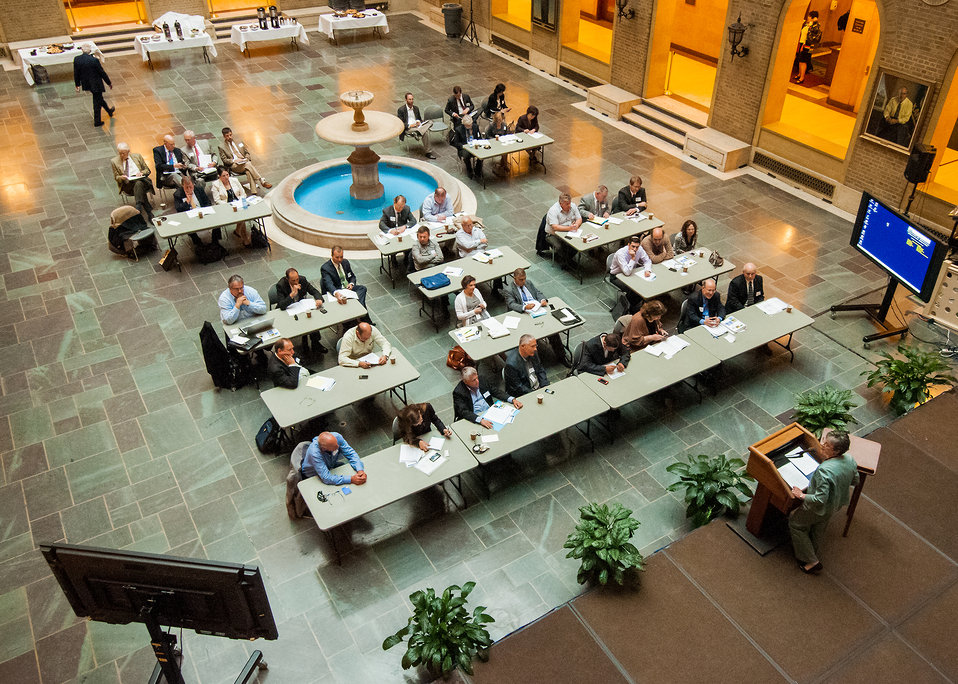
Agriculture Under Secretary for Research, Education and Economics (REE) Dr. Catherine Woteki welcomes participants to the U.S.-Israel Bio-Challenge Symposium at the U.S. Department of Agriculture (USDA) in Washington, D.C. on Thursday, Apr. 18, 2013.